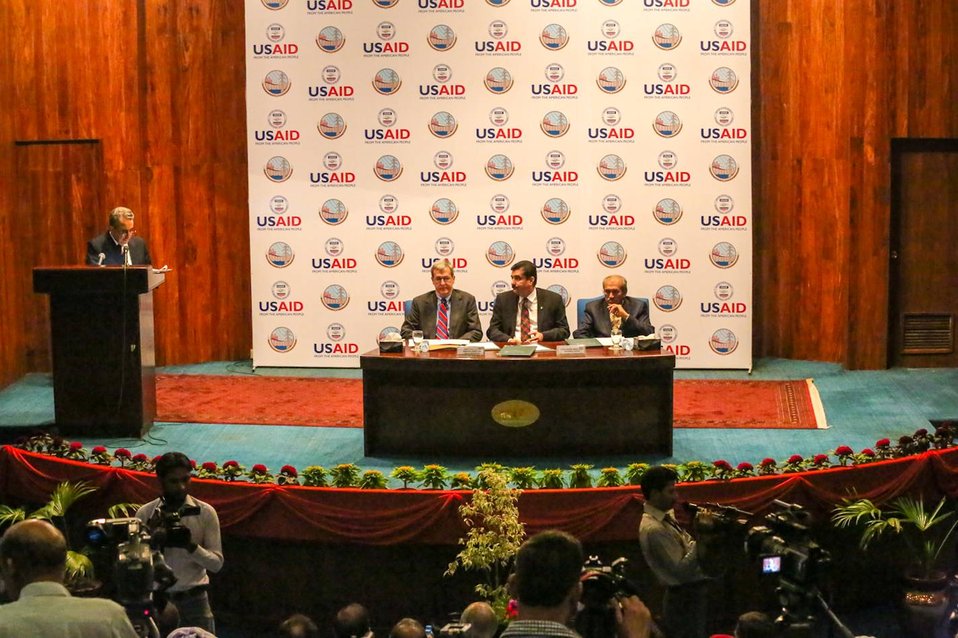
Islamabad, September 12, 2012 - Project Launch Ceremony of Waran Canal Irrigation System